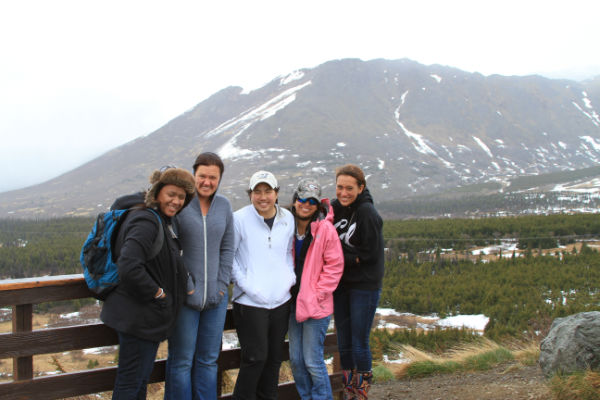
2012-Alaska Region-Work(09)

Alaska Career Discovery Internship Program is partnership with the Student Conservation Association to provide a 12 week internship to college freshman and sophomores to discover careers with the U.S. Fish and Wildlife Service.

Once in Alaska interns convened in Anchorage to acclimatize to the 'Far North' and receive more training including: bear safety, aviation safety, and more.